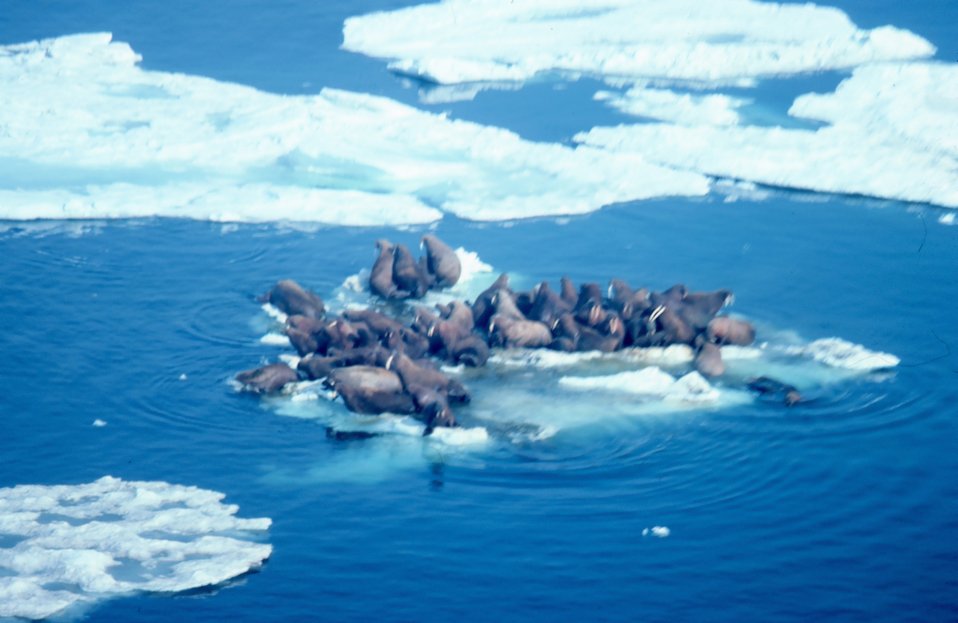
Walrus - Odobenus rosmarus divergens - hauled out on Bering Sea ice.